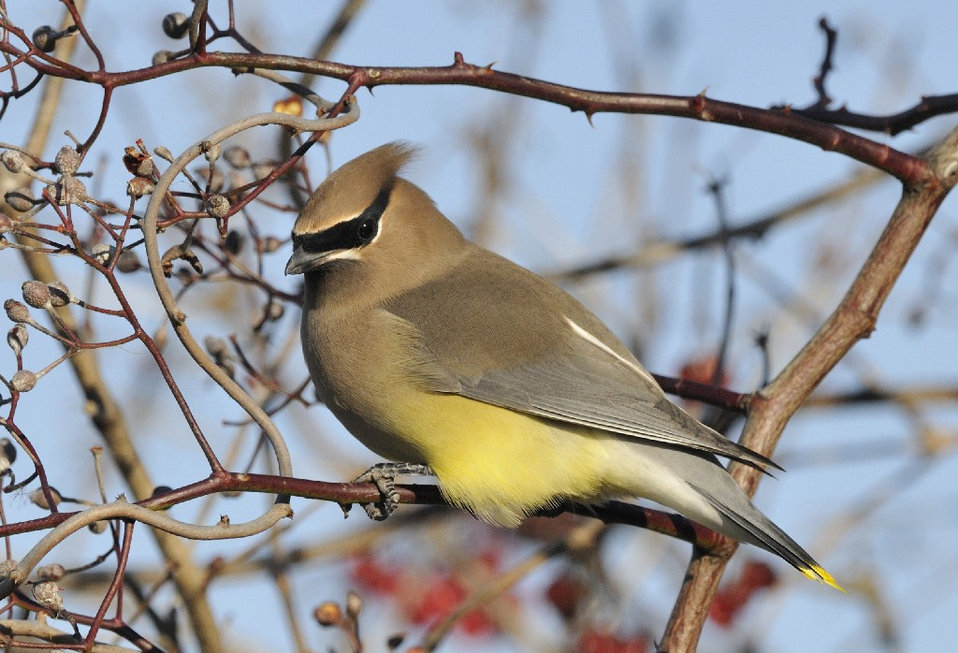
Photo of the Week - Cedar Waxwing (MA)

Photo of the Week - 1/14/13

Cedar waxwing photographed in Hadley, MA.